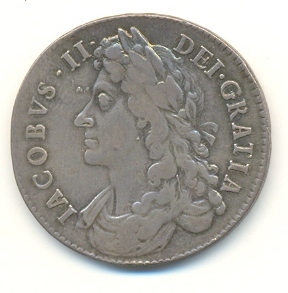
James2coin